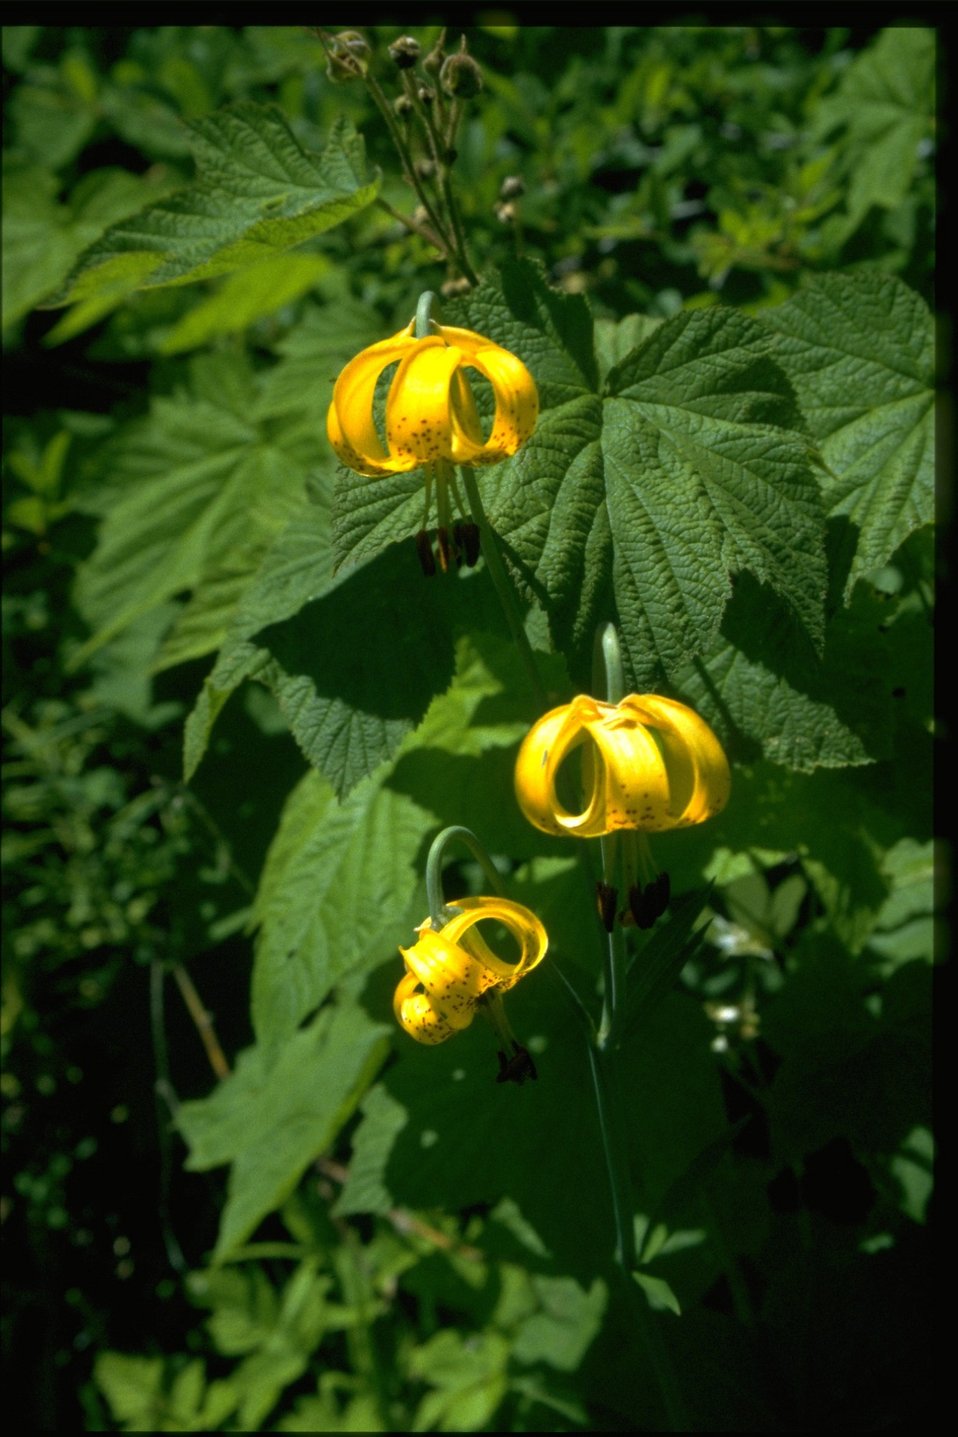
Medium shot of Lilium columbianum.